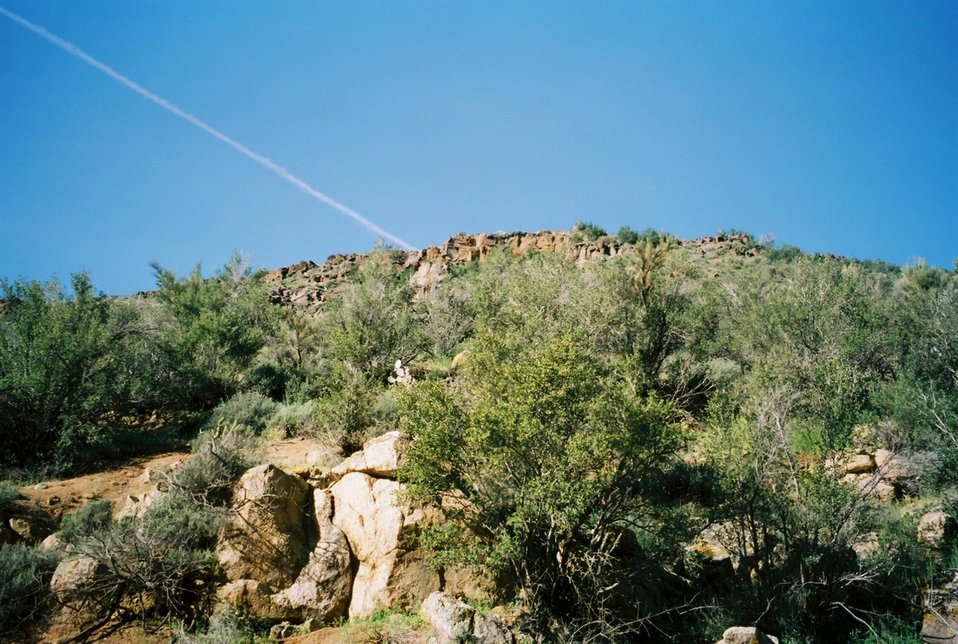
The blue Arizona sky hangs over the Agua Fria National Monument.